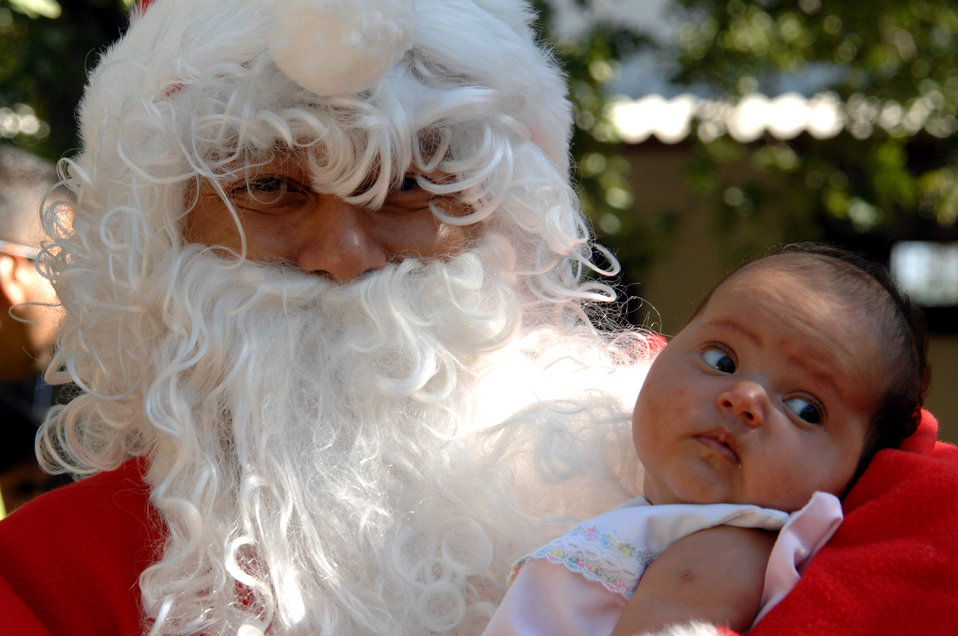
Santa pays an early visit

Santa Claus gets his picture taken with an orphan girl from Hogar San Antonio de Padua Orphanage in Comayagua, Honduras. Operation Christmas Wish is an annual trip made by Airmen from the 1st Special Operations Wing who deliver more than 9,000 lbs of Christmas packages to hundreds of Honduran orphans. Santa is Tech. Sgt. Norman Padilla Cruz from the 1st Special Operations Aeromedical Squadron.